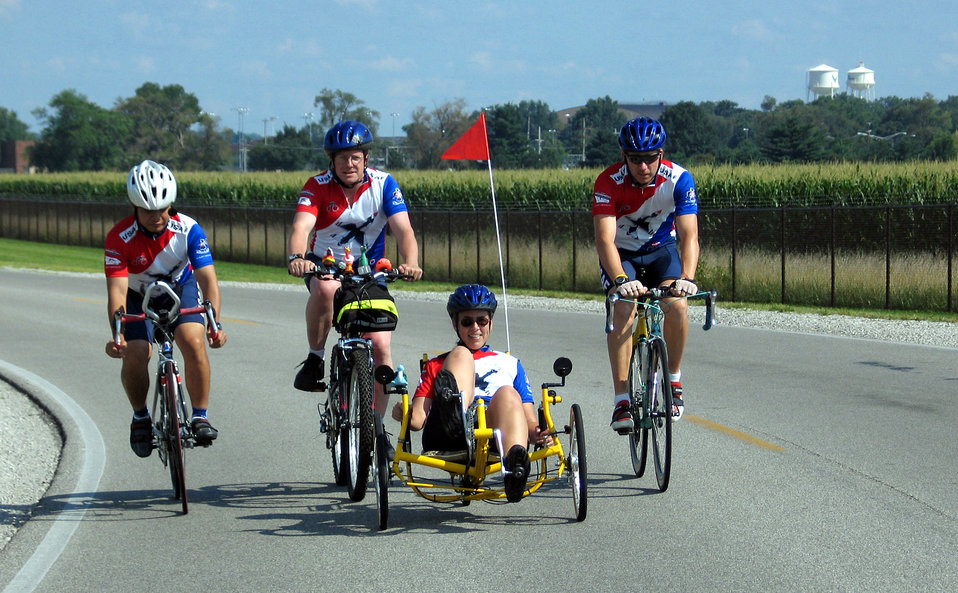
Air Force cyclists continue cycling legacy for 10th year

SCOTT AIR FORCE BASE, Ill. -- (From left to right) Capt. Wayne Yong, Ed Goreczny, Dr. Carol Belt and Tech. Sgt. Eric Wells take a ride here July 16 to prepare for the Des Moines Register's Annual Great Bicycle Ride Across Iowa. The cyclists will join more than 100 other Air Force riders for the seven-day, nearly 500-mile ride July 25 to 31.